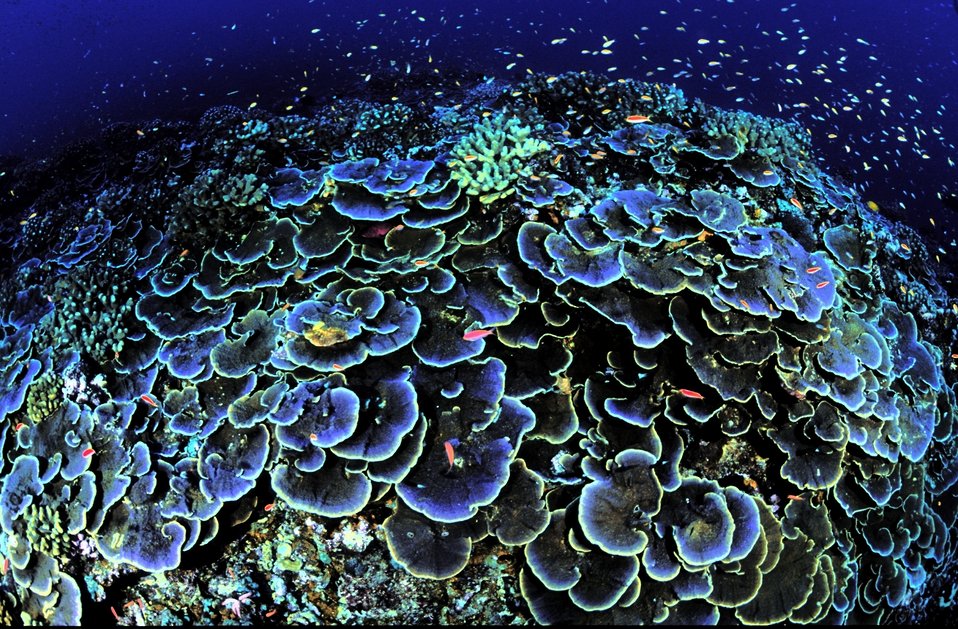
Coral at Jarvis Island NWR

Sworls of Montipora aequituberculata, a core coral, attract fish at Jarvis Island National Wildlife Refuge in the Pacific, about 1,300 miles southwest of Honolulu.